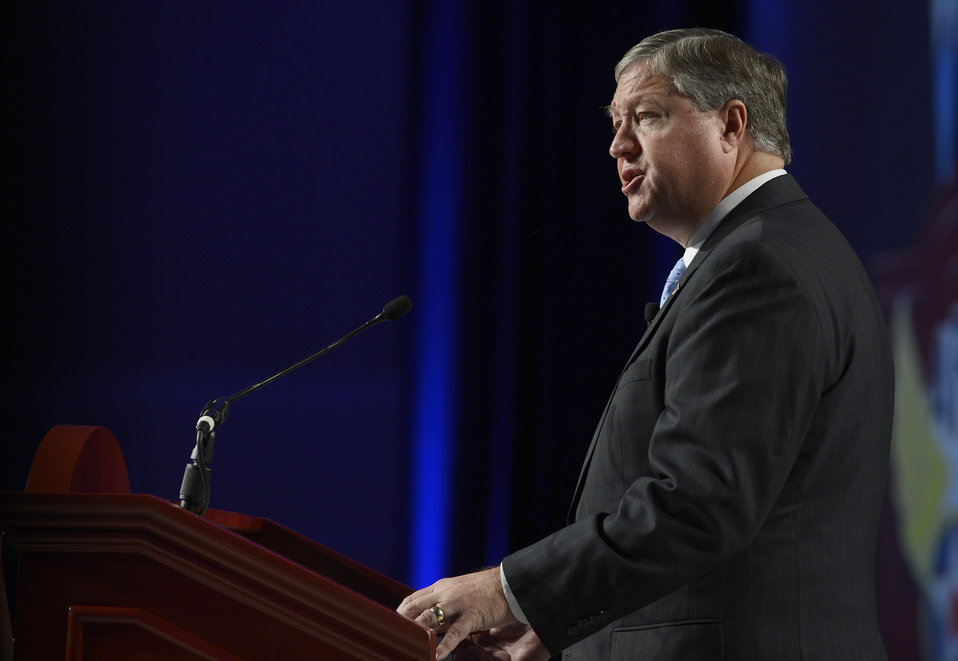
Donley talks sequestration, explains AF budget plans

Secretary of the Air Force Michael Donley discusses the service's budget strategy during his address at the Air Force Association's Air and Space Conference and Technology Exposition in Washington, D.C., Sept. 17, 2012. During his keynote remarks at the conferenc, Donley discussed the threat of sequestration and its effect on crafting the service’s budget.